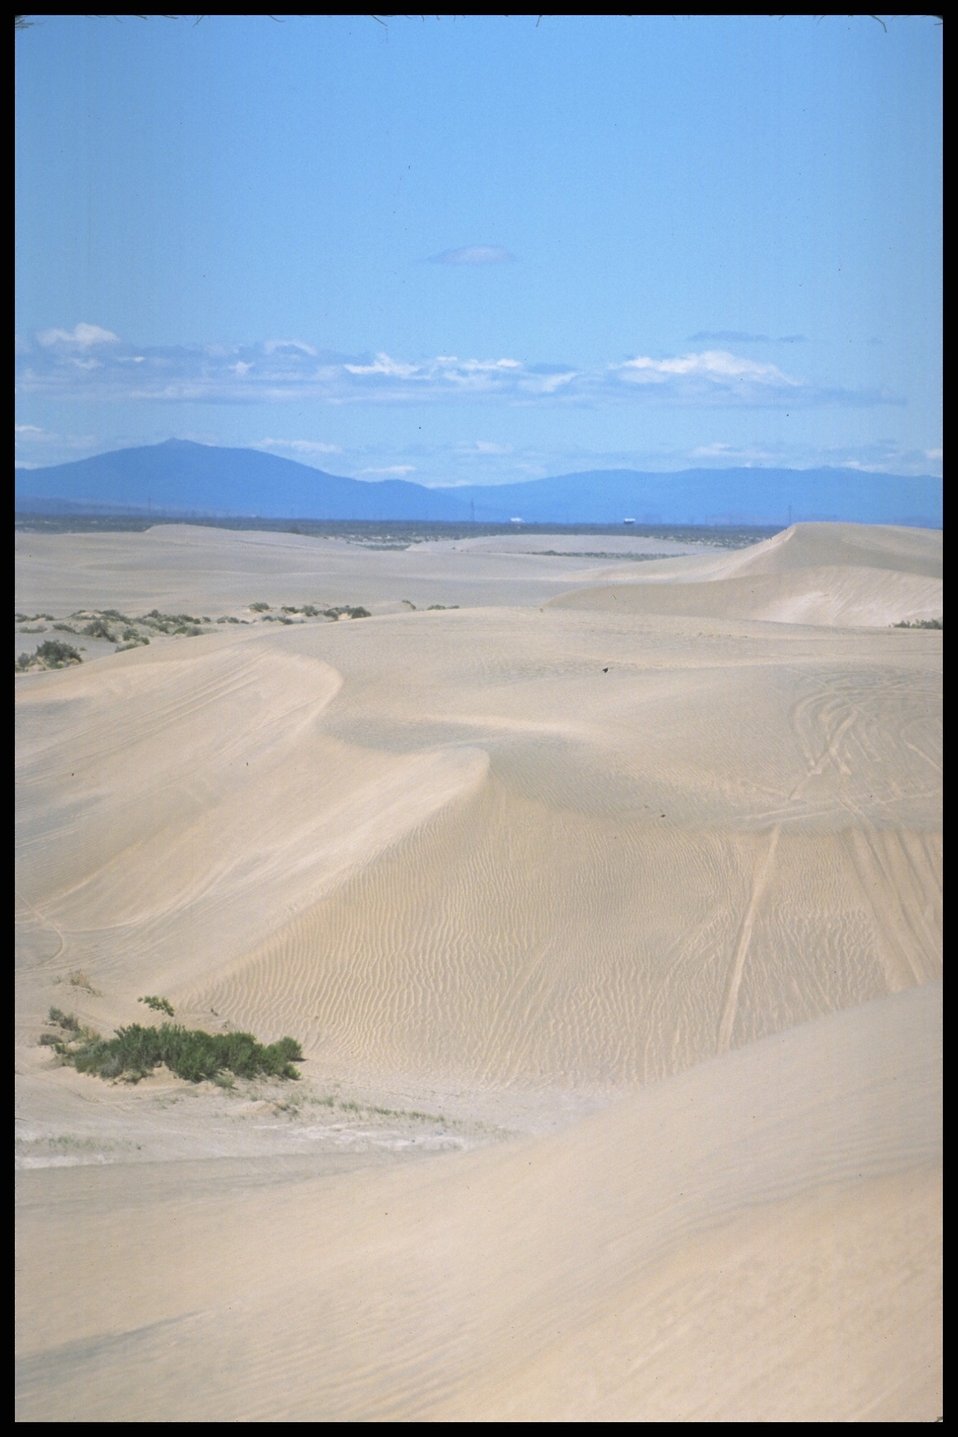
Sand Dundes at Christmas Valley, Lakeview District.